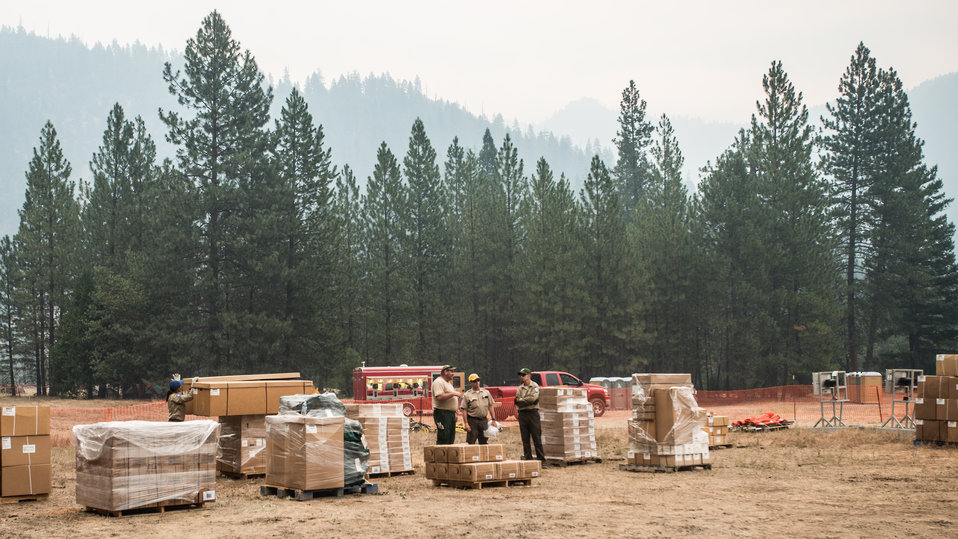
The Supply Cache is a major logistics factor in fighting the Salmon River Complex Fire burning northwest of Sawyers Bar and west of Etna and Yreka, CA in the Klamath National Forest, on Tuesday, Aug. 6, 2013. It is vital that when a firefighter needs fire resistant clothing, a Mccloud Tool, Pulaski Axe, Combi Tool, pumps, connectors and hoses to draw water from a portable reservoirs to pressurize hand line (fire hoses), they go to this centralized point to get readily available item for issue or replacement as needed. These supplies have been shipped from the National Interagency Supply Cache System depots and/or other caches to this and other fires across the nation.